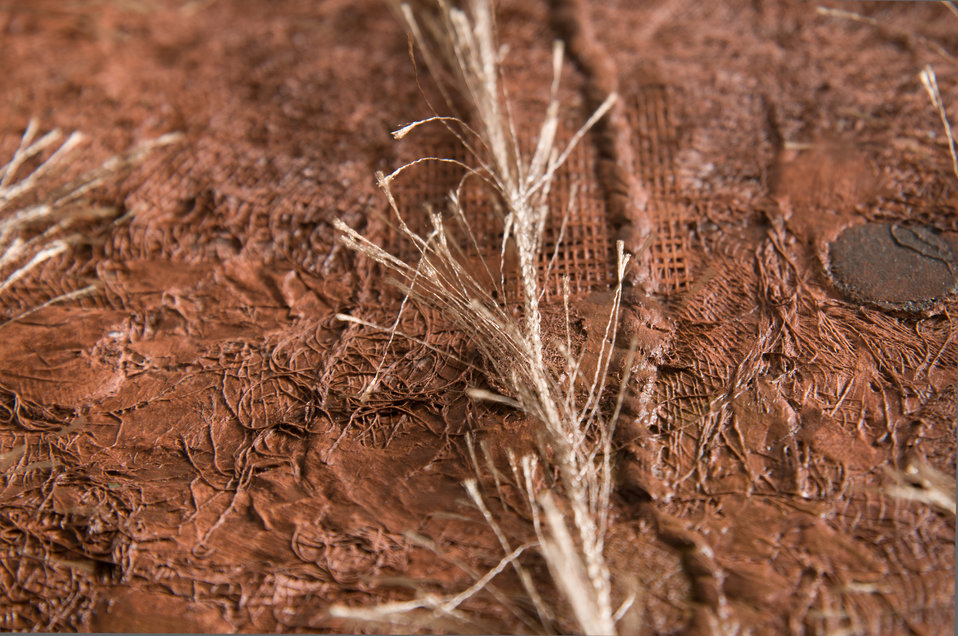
Online Viewer's Choice entries of the 2013 Art & Agriculture, Tuesday, July 9, 2013, in the South Building, Washington, D.C. Themes were expressed by employees from across the department and the contest was open to full-time and part-time USDA employees. Winning artwork will be displayed till the end of the year. U.S. Artistic expression is a creative outlet that is vital for an individual to grow and develop.